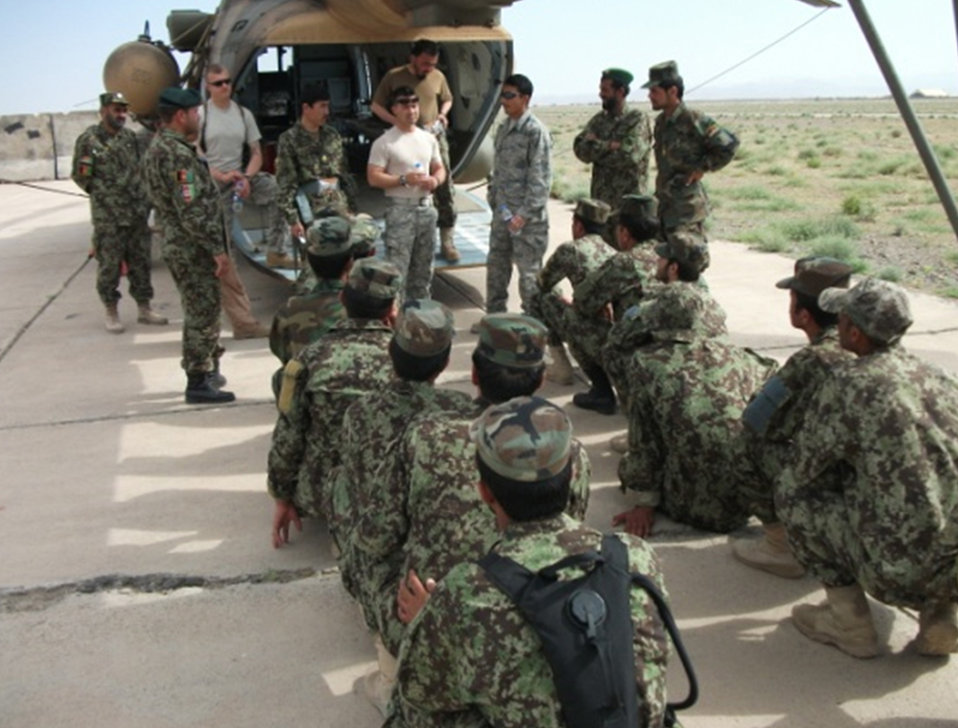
Afghan Mi17 advisers

Air Force advisers conduct pre-brief ground instructions for Afghan National Army soldiers in training in Kabul, Afghanistan. Seven Afghan Mi-17 instructors graduated May 4, 2011, from the first Mi-17